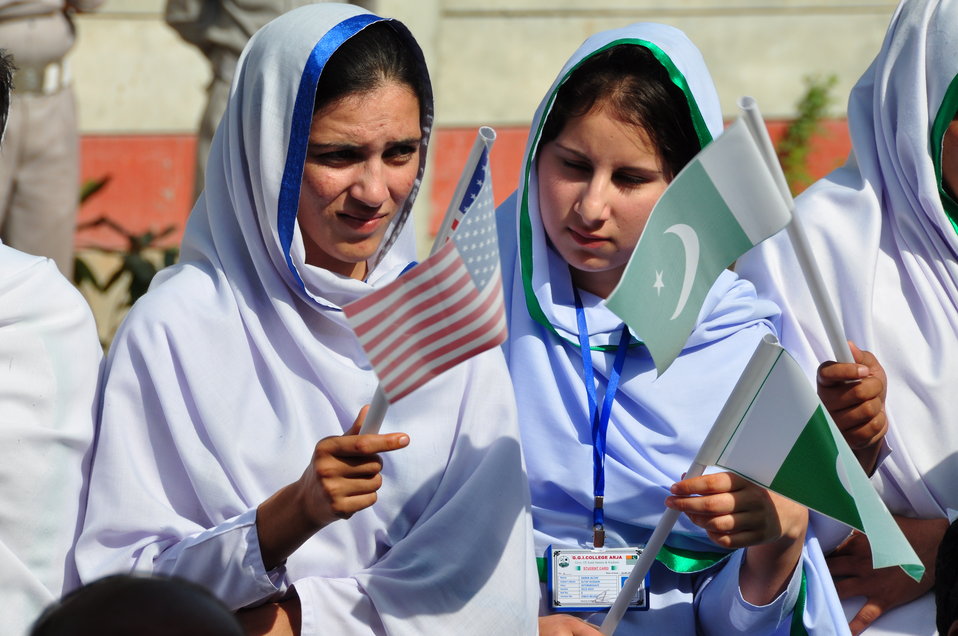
Dhirkot Reconstructed Hospital Inauguration Pakistan Reconstruction Program 14